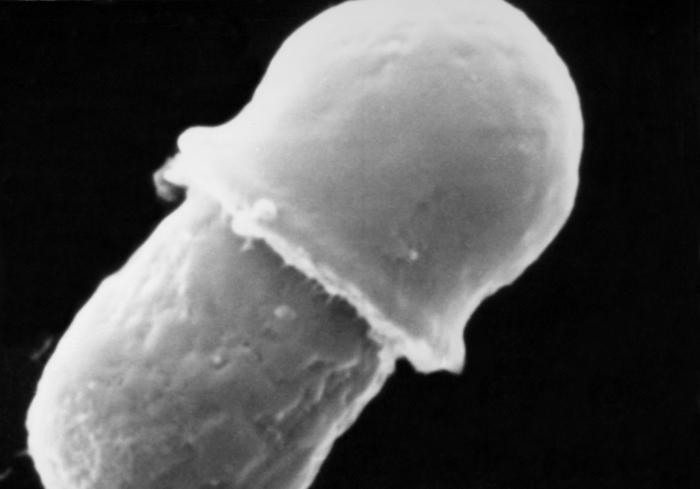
Scanning Electron Micrograph of Malassezia lipophilis